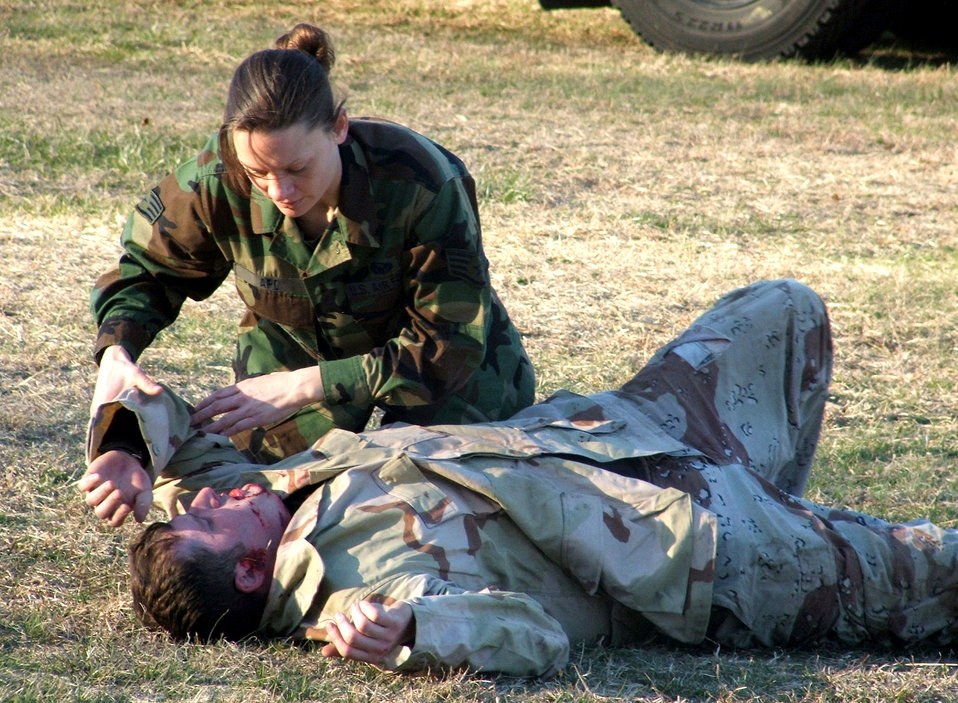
Phoenix Raven

Staff Sgt. April Apo assists a